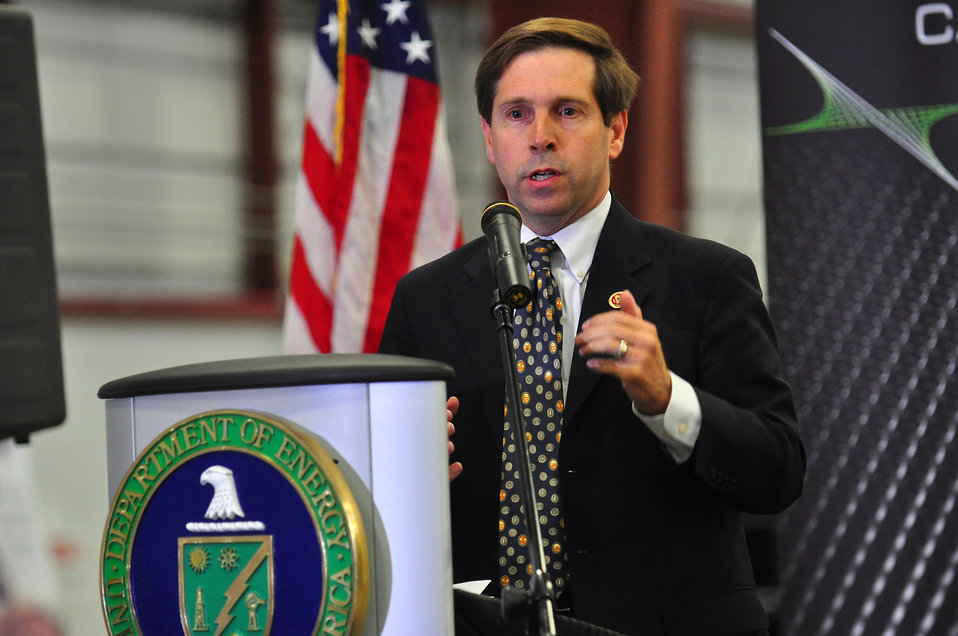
Carbon Fiber Technology Facilty Open House Oak Ridge Tennessee

13-025 DOE photo Lynn Freeny
Tennessee Congressman Chuck Fleischmann